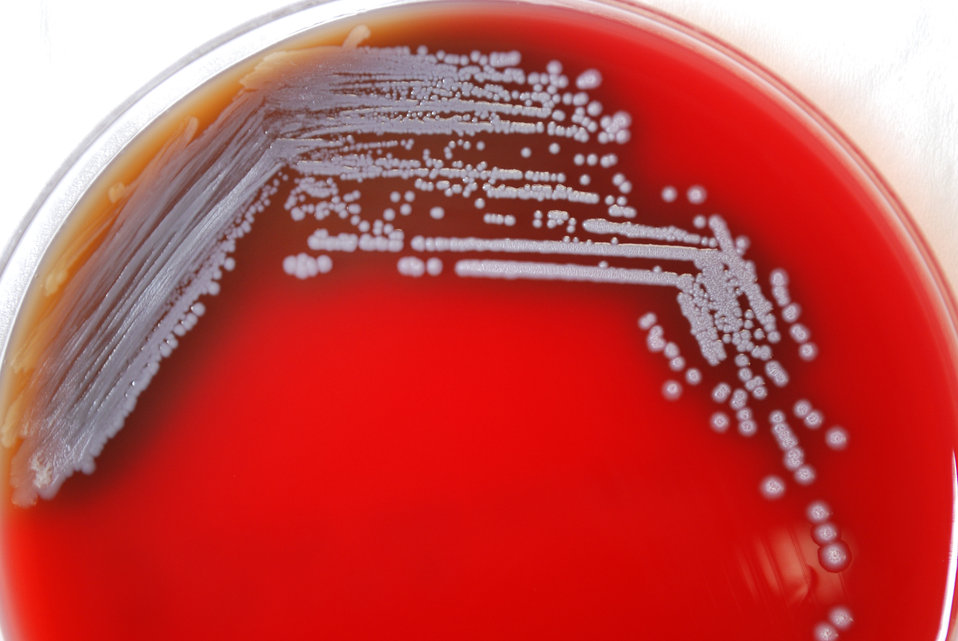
An enlarged view of PHIL 12254, this photograph depicts the colonial morphology displayed by Gram-negative Burkholderia pseudomallei bacteria, which was grown on a medium of sheep's blood agar (SBA), for a 48 hour time period, at a temperature of 37�C.